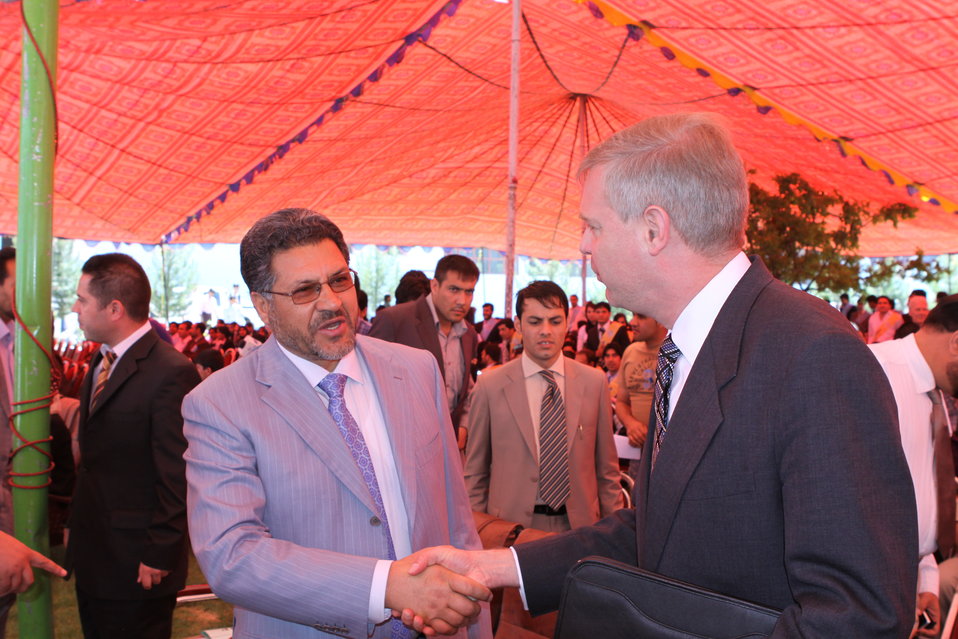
100522 ATVI Graduation 028